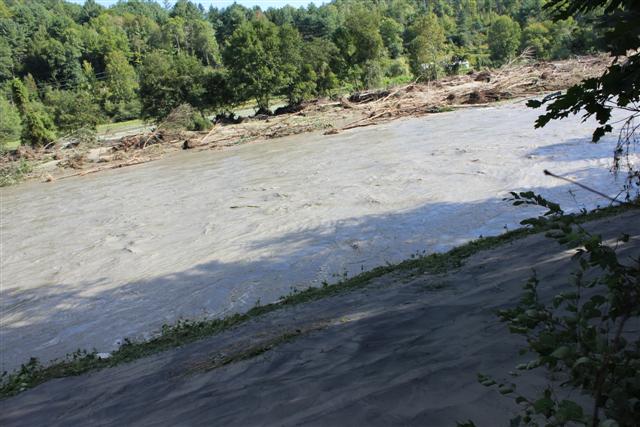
White River

Levels of the White River were high after Hurricane Irene came through Bethel, VT. on August 28, 2011.